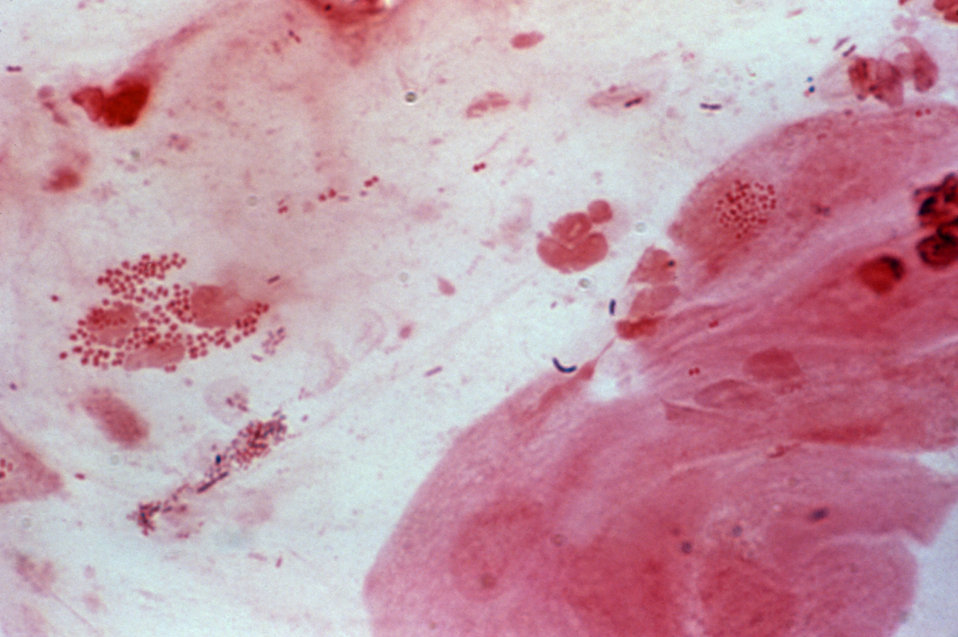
This photomicrograph is showing Neisseria gonorrhoeae in a cervical smear using the Gram-stain technique.